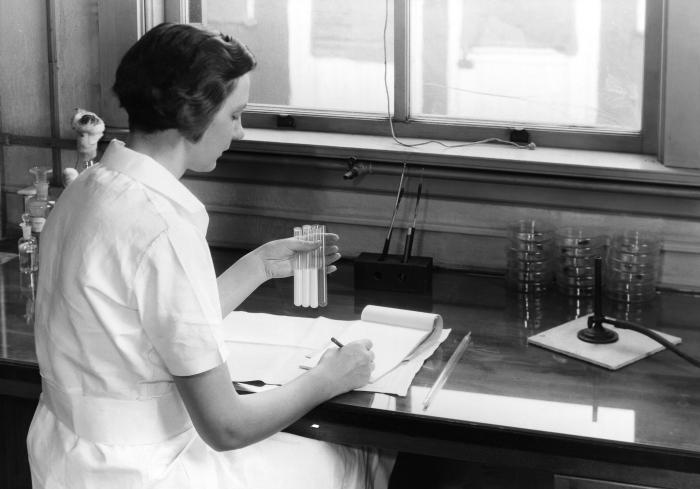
In this historic image, a laboratory scientist was conducting a demonstration of a pH test on some bovine milk samples, extracted in order to study an outbreak of mastitis in a herd of cows. This photograph was taken in the Veterinary School at the University of Minnesota, October, 1934.